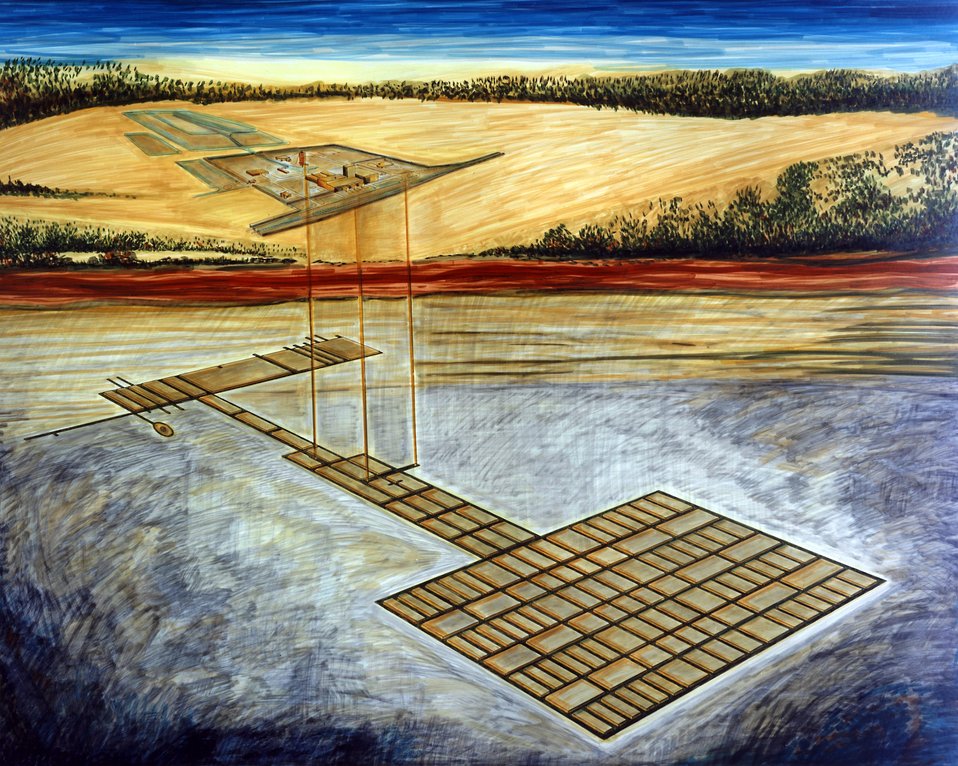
ARTIST'S CONCEPT OF THE DRILLING.

THE WASTE ISOLATION PILOT PLANT IS A DOE RESEARCH AND DEVELOPMENT FACILITY FOR DEMONSTRATING THE SAFE DISPOSAL OF TRANSURANIC RADIOACTIVE WASTES. TEST SHAFTS HAVE BEEN DRILLED TO A DEPTH OF 2,100 FEET. THE SHAFTS, ONE 6 FEET IN DIAMETER AND THE OTHER 12 FEET IN DIAMETER, PROVIDE AN ENTRY PASSAGE AND VENTILATION TO THE UNDERGROUND SALT ROCK FORMATION THAT IS BEING TESTED TO DETERMINE ITS SUITABILITY FOR RADIOACTIVE WASTE STORAGE.